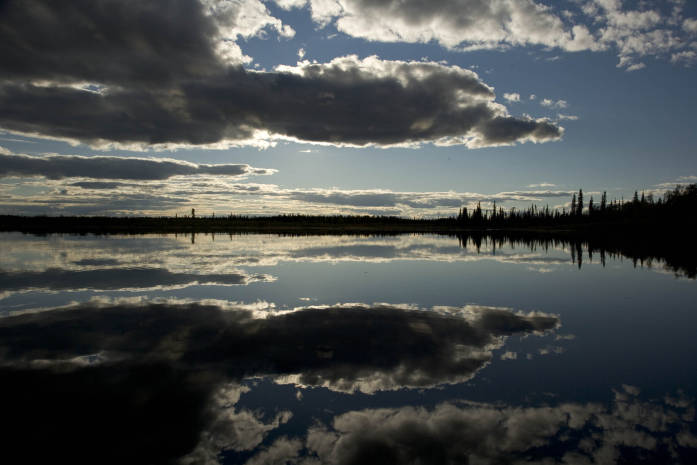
Sunset reflection, Kanuti Lake